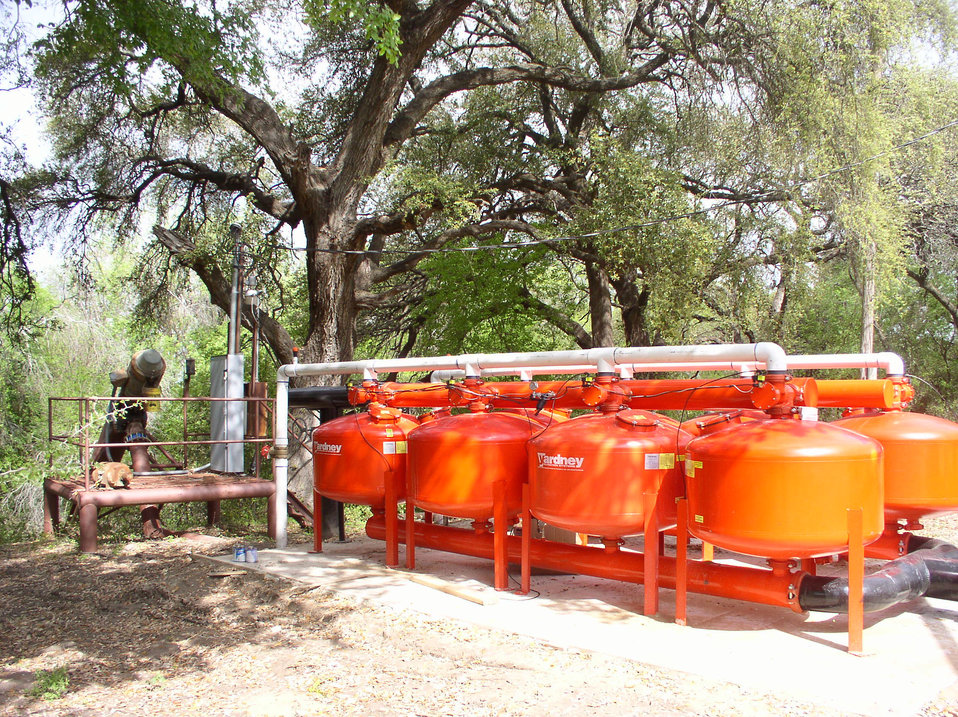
Arrowhead Farms of Zavala County, TX, now draws water from either the Nueces River (on other side of nearby trees) or deep water wells (brown pipes), either of which are filtered through sand tanks and pumped to the tree roots on Tuesday, April 6, 2010. Sediment free water is essential because, it will flow through various automated pressure and flow control valves, pipes, tubing and finally out emitters that drip water out of tiny holes at a rate of 1 gallon/hr. Each tree has several emitters under its drip line and over a typical 24 hour watering period will get just the right amount of water to survive Texas temperatures as best as possible. The farm has been owned by Mr. Akram Mohammad, a pecan farmer since 2005. The 719-acre farm with 10,000 trees, features some orchards with underground micro irrigation system that feeds water to the roots of 4,380 pecan trees on 146 acres. Mr. Mohammad said, “USDA (U.S. Department of Agriculture) was essential to my business and trees surviving the recent exceptional drought. The trees were stress free thanks to underground micro-irrigation. This is essential to the future growth of Texas agriculture and good for America.” U.S. Department of Agriculture’s (USDA) Environmental Quality Initiative Program (EQIP) awarded Mr. Mohammad a $130,000 grant in 2008. He provided $26,000 for the balance of the $156,000 total cost to install a 146-acre underground micro-irrigation for 4,380 trees.